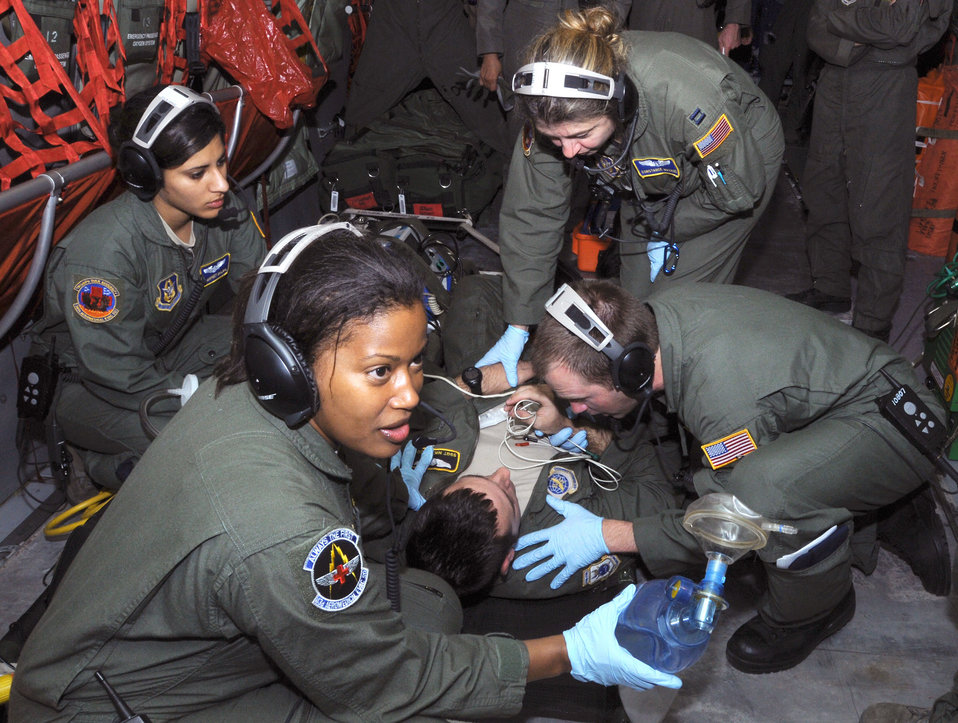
Total force aeromedical evacuation technicians gain unique training

Airmen from the 36th Aeromedical Evacuation Squadron and the 43rd Aeromedical Evacuation Squadron treat Staff Sgt. Nikolaus Falcon for simulated combat injuries June 26, 2010 during an in-flight exercise. The total force integration of aeromedical evacuation specialists from the Reserve and active Air Force was the theme behind a three-day training mission that took place on a KC-135R Stratotanker. Sergeant Falcon is assigned to the 43rd AES.